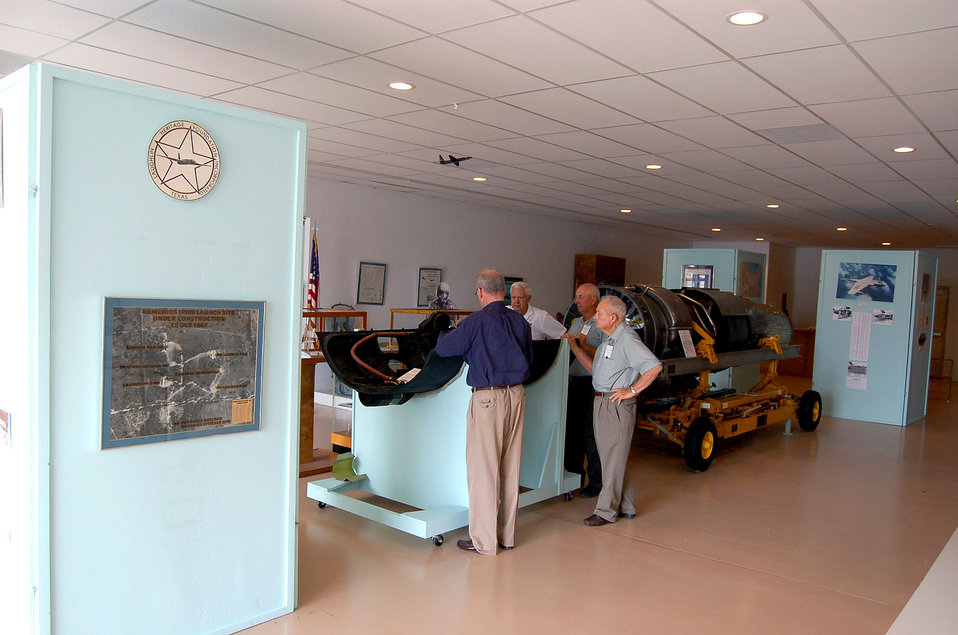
Museum displays Air Force heritage, history

Members of the Laughlin Heritage Foundation gather around an exhibit at the Laughlin Heritage Foundation Museum in Del Rio, Texas, on Tuesday, June 27. The museum has been open for six months and is run by volunteers.